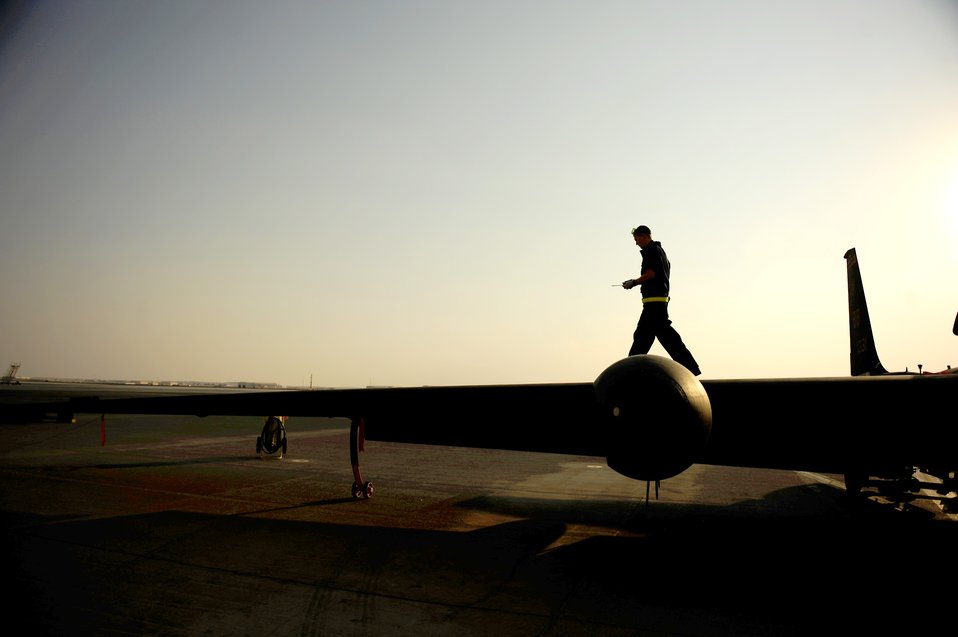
Technicians work on the Dragon Lady

Senior Airman First Class Brian Burke walks down the wing of a U-2 Dragon Lady after all checks are complete Nov. 23, 2010, at an air base in Southwest Asia. Airman Burke is assigned to the 380th Expeditionary Aircraft Maintenance Squadron.